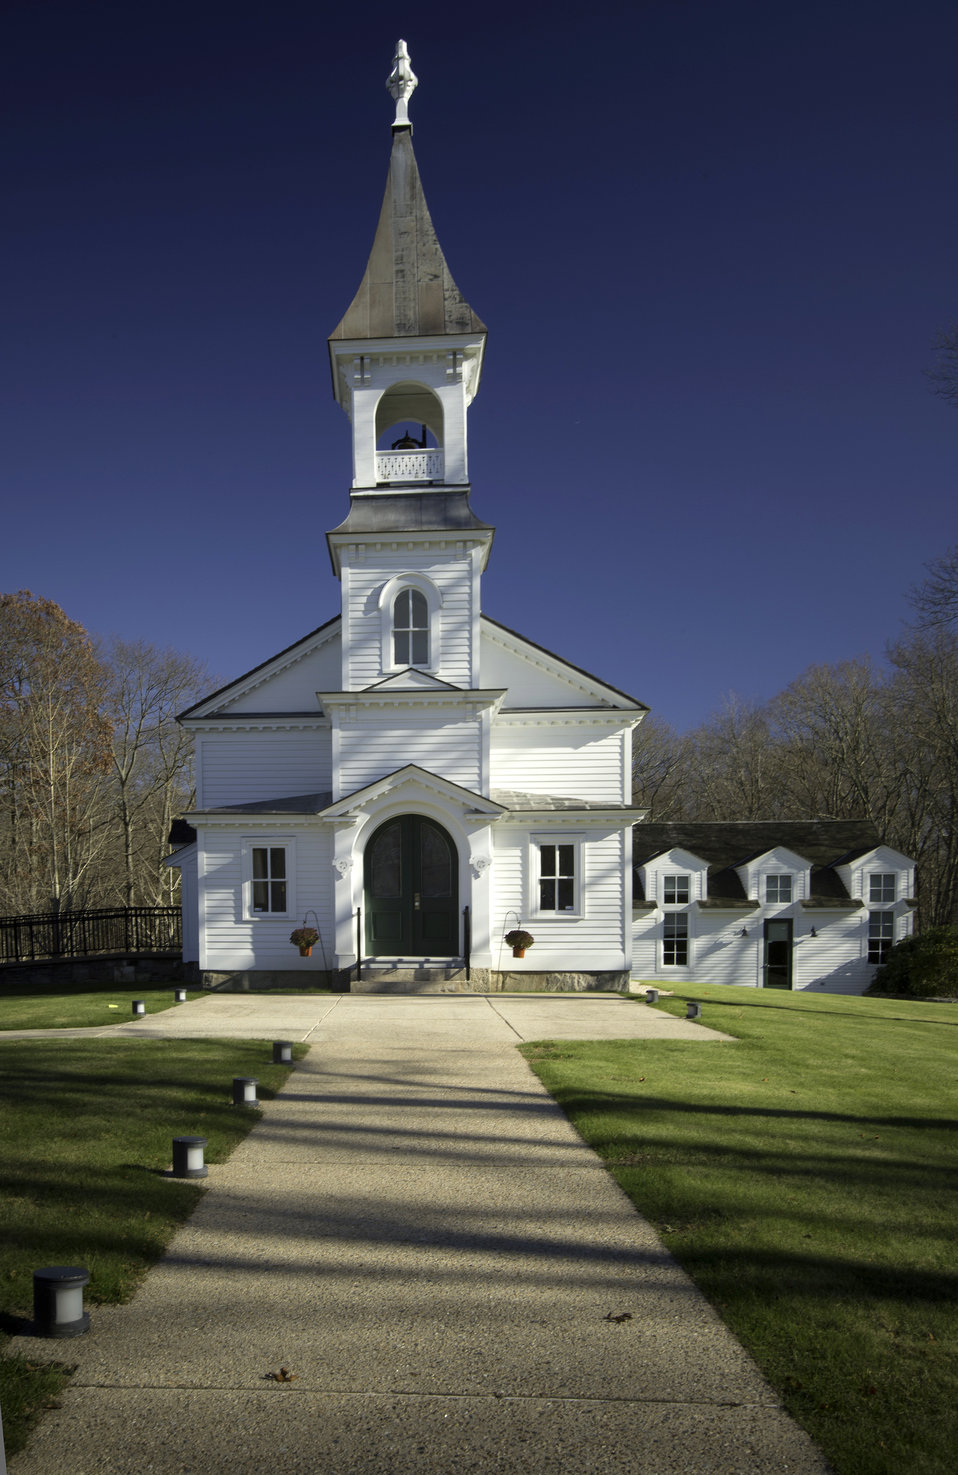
Lucy Occom Tantaquidgeon, her daughter Lucy Tantaquidgeon Teecomwas, and her granddaughter Cynthia Teecomas Hoscoat deeded a plot of land on Mohegan Hill in 1831 to tribal ownership for the building of the Mohegan Congregational Church. The church sits on a half-acre of continuously owned tribal land. Proving the Mohegan Tribe’s ownership of that plot of land and proving the female line of leadership that began with Lucy Occom was critical to the Tribe’s successful petition for reinstatement of federal recognition in 1994.